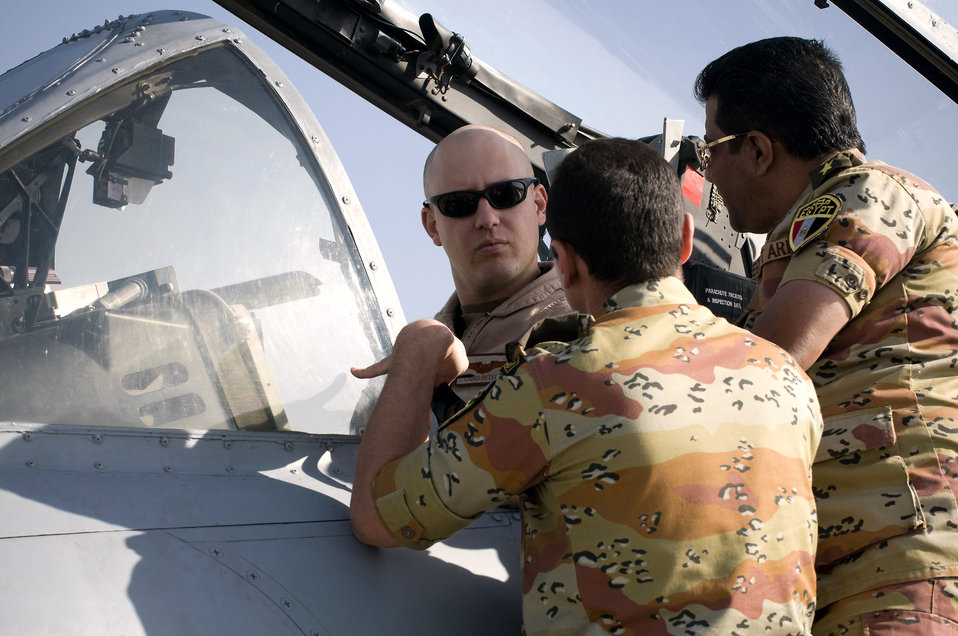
Egyptians learn airpower

Capt. Chris Petek shows two Egyptian medical personnel the cockpit of an A-10 Thunderbolt II at Bagram Airfield, Afghanistan, Nov. 29. Captain Petek is an A-10 pilot deployed from the 75th Fighter Squadron at Moody Air Force Base, Ga.